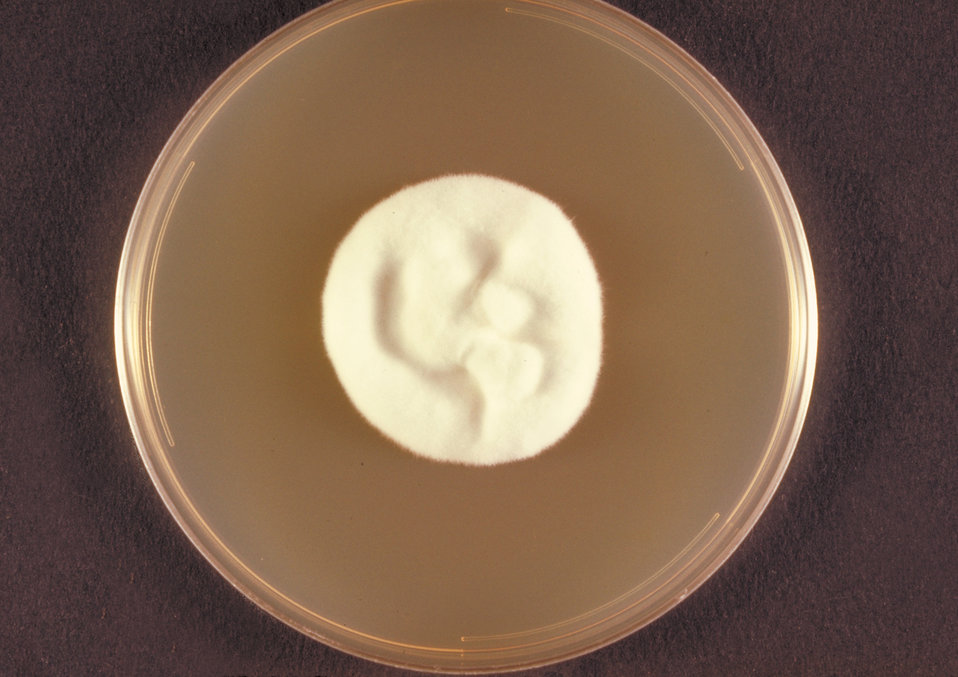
This is a top view of a Sabouraud's dextrose agar plate culture of a Microsporum persicolor fungal colony.